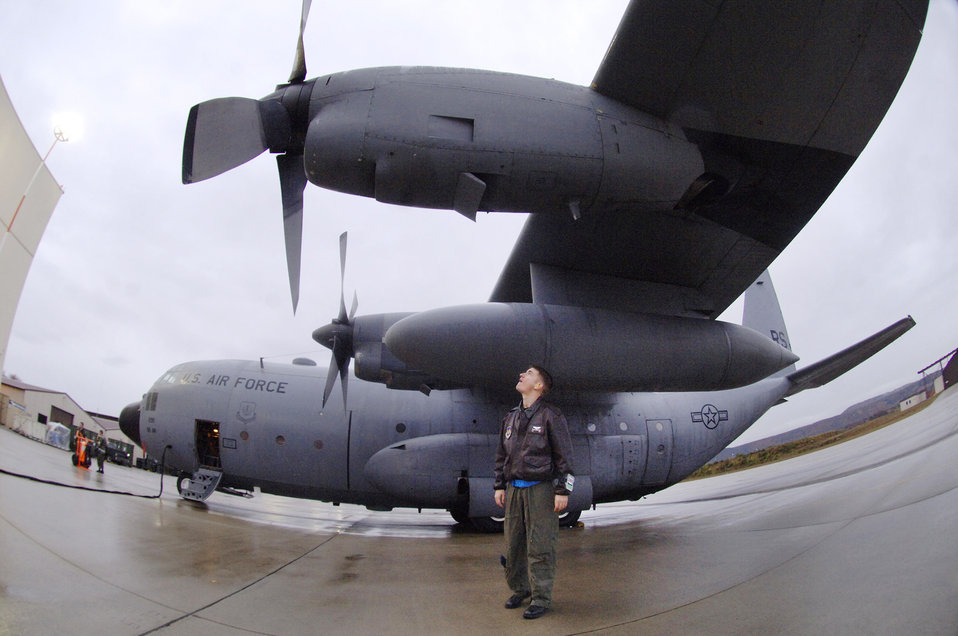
C-130 arrival in Poland marks end, new beginning

Capt. Tyler Robertson performs a walk around inspection prior to engine start up before piloting the last E-model C-130 Hercules Nov. 2, 2009, from Ramstein Air Base, Germany, to Powidz Air Base, Poland.